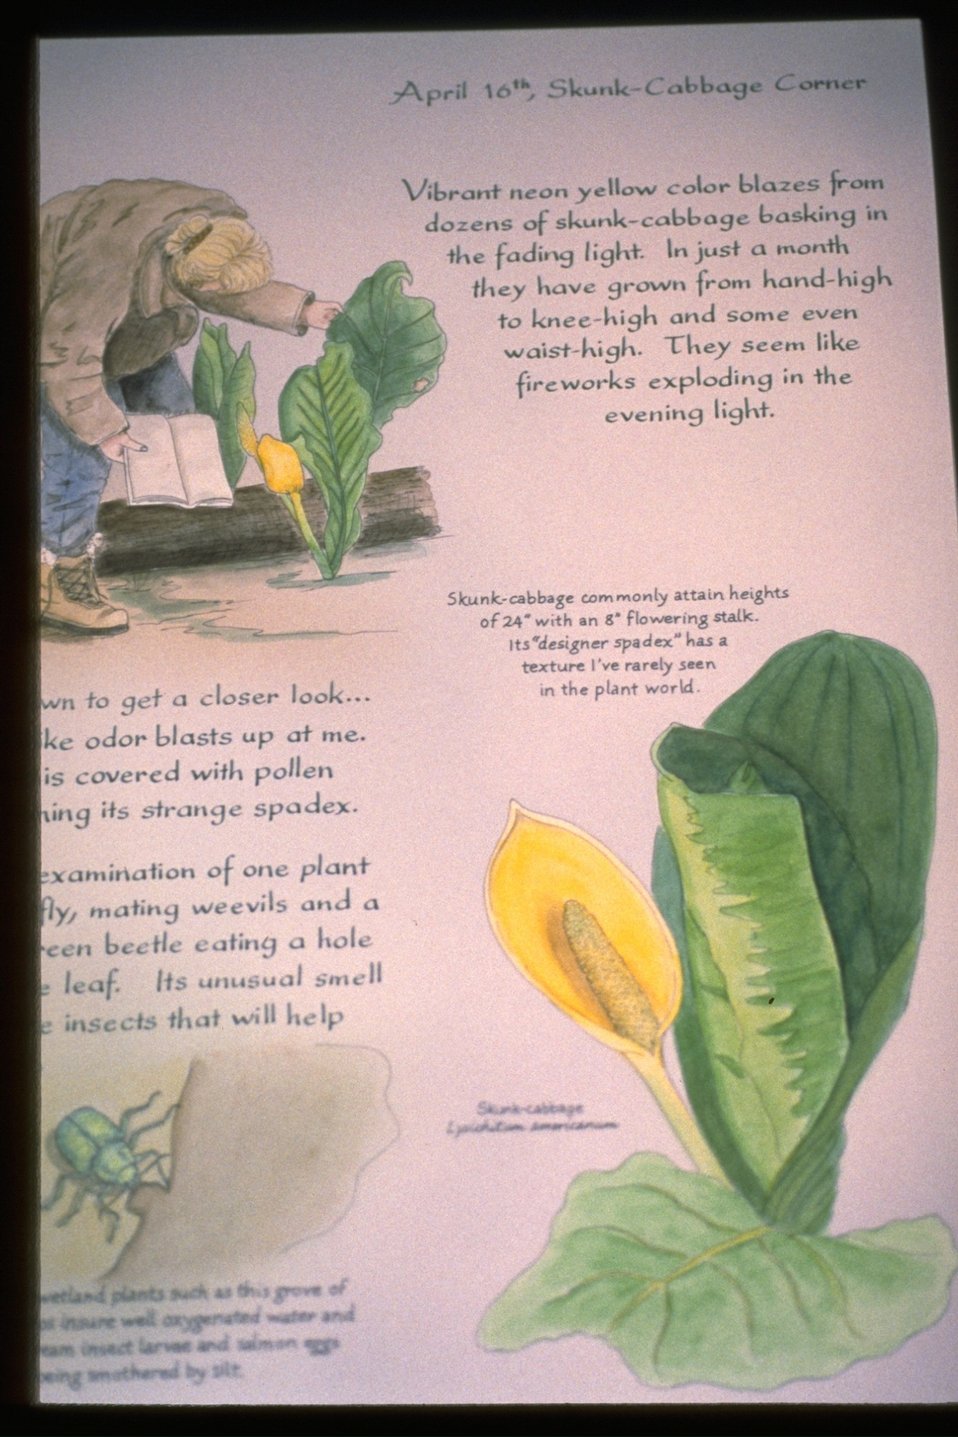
Interpretive Panels: Boardwalk Trail Journals.